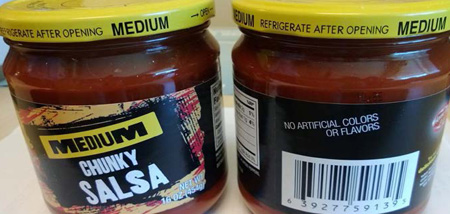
RECALLED – Salsa

July 22, 2013 – Product Recall – Olam Tomato Processors, Inc. Announces Voluntary Recall of Mild and Medium Chunky Salsa Because It May Contain Large Glass Pieces.